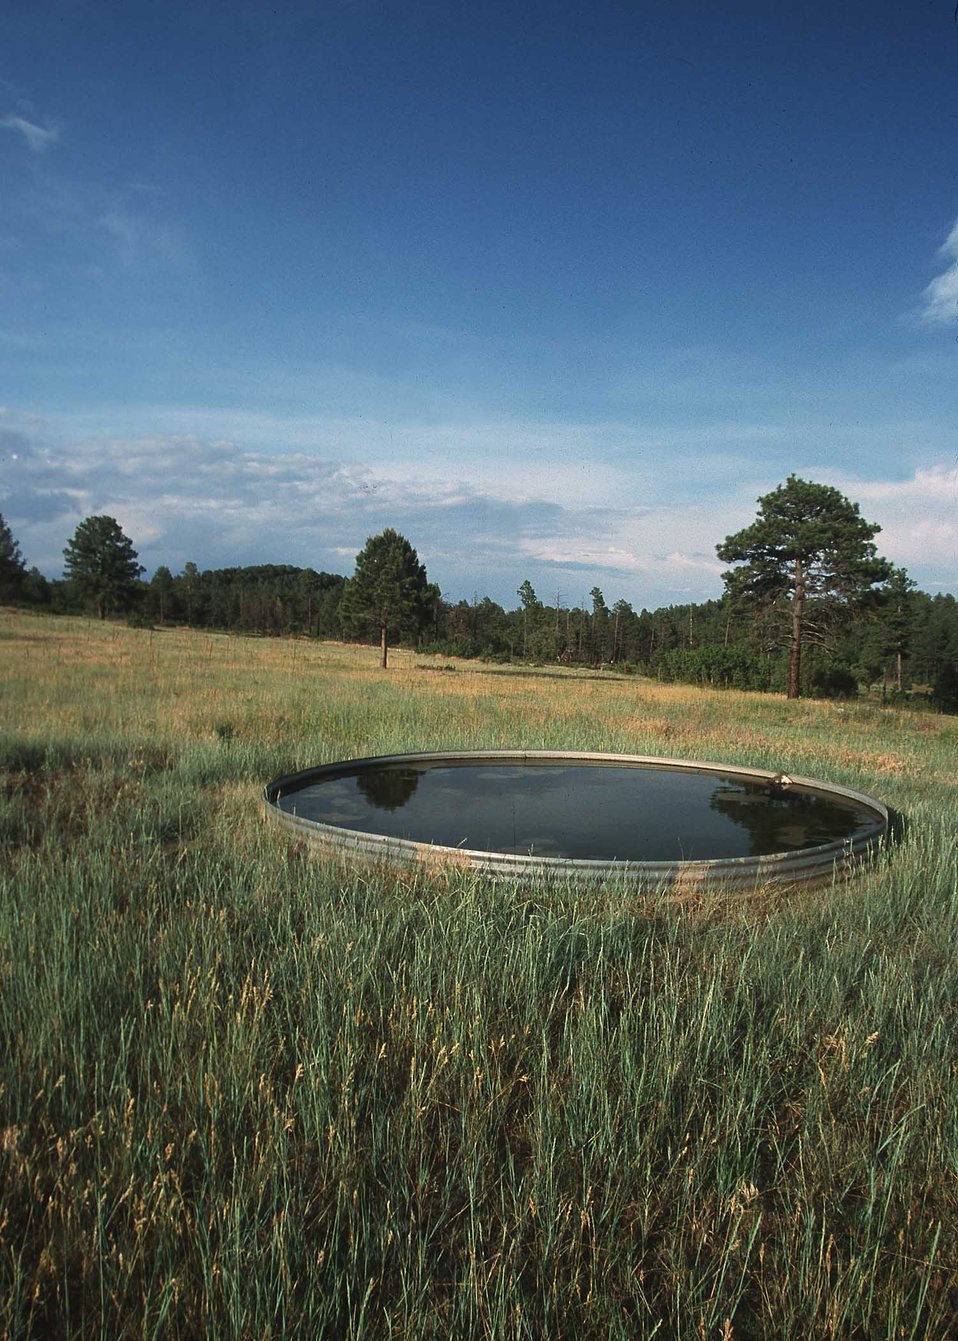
Livestock Water Trough near Spanish Peaks, CO.